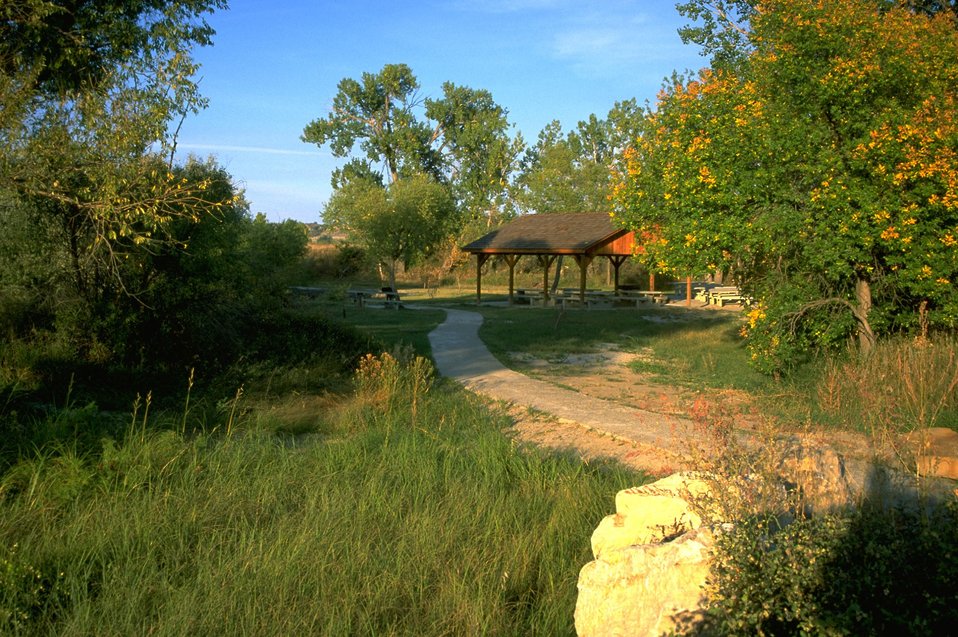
Group shelter and picnic area at Matthews Recreation Site